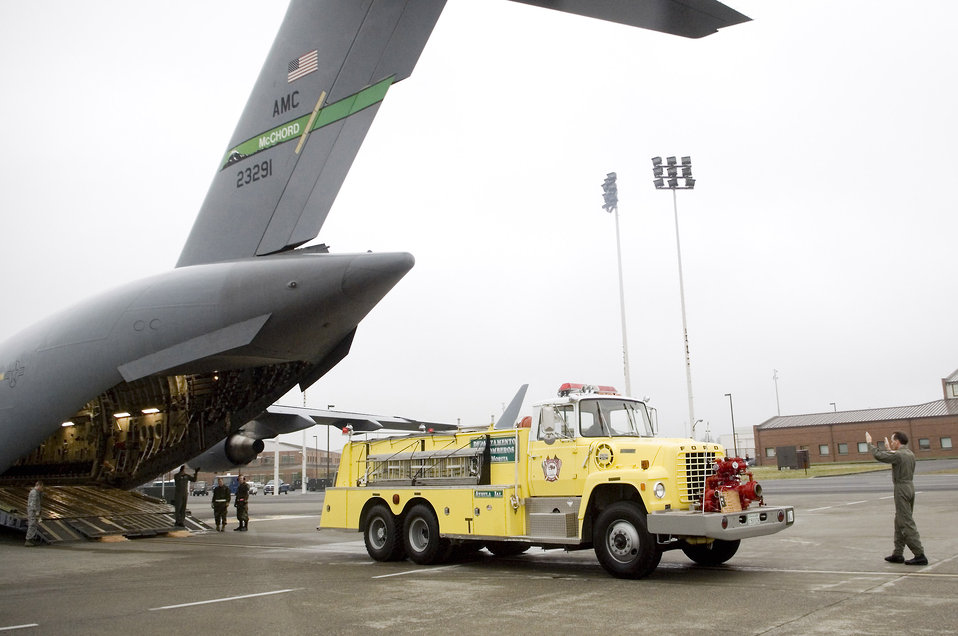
Hola bomberos

Loadmasters work together to load a firetruck onto a C-17 Globemaster III Sept. 19 at McChord Air Force Base, Wash. The firetruck and pallets of rescue equipment are headed to a remote village outside of Guadalajara, Mexico. Through the Denton Amendment, three local Washington nonprofit agencies worked with the 446th Airlift Wing for more than a year in order to transport the firetruck and cargo to Mexico.